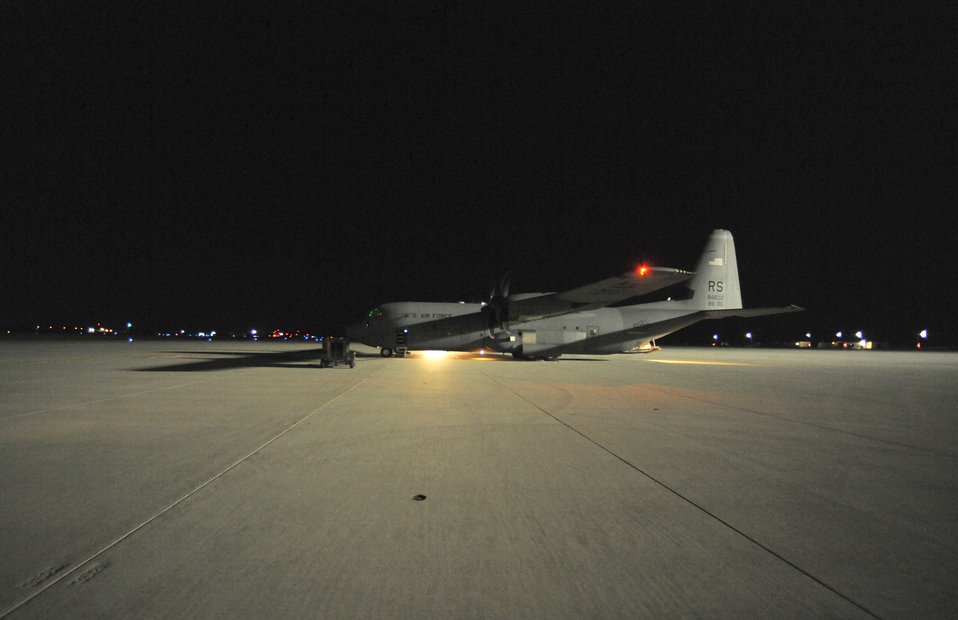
Operation Odyssey Dawn

SPANGDAHLEM AIR BASE, Germany ? A C-130J Super Hercules supporting Operation Odyssey Dawn prepares to taxi out from here March 21. Joint Task Force Odyssey Dawn is the U.S. Africa Command task force established to provide operational and tactical command and control of U.S. military forces supporting the international response to the unrest in Libya and enforcement of United Nations Security Council Resolution (UNSCR) 1973. UNSCR 1973 authorizes all necessary measures to protect civilians in Libya under threat of attack by Qadhafi regime forces. JTF Odyssey Dawn is commanded by U.S. Navy Admiral Samuel J. Locklear, III.